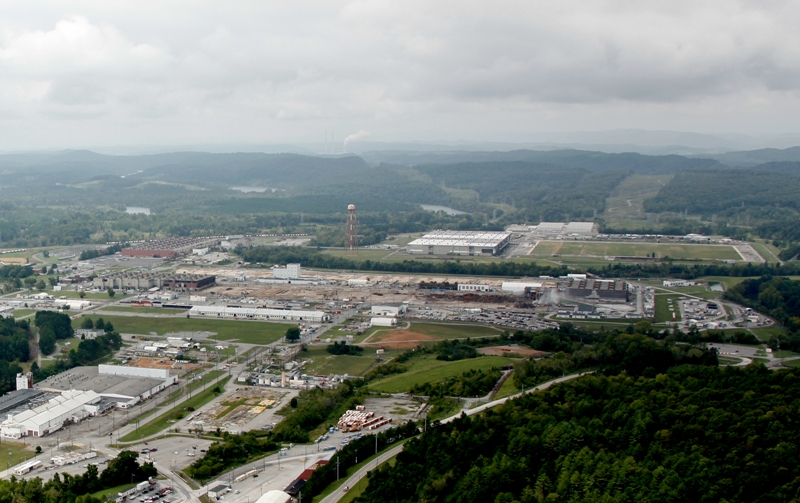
East Tennessee Technology Park

September, 2012

Aerial photo of Oak Ridge’s East Tennessee Technology Park. The former uranium enrichment complex is undergoing demolitions and cleanup to become a privately owned and operated industrial park.